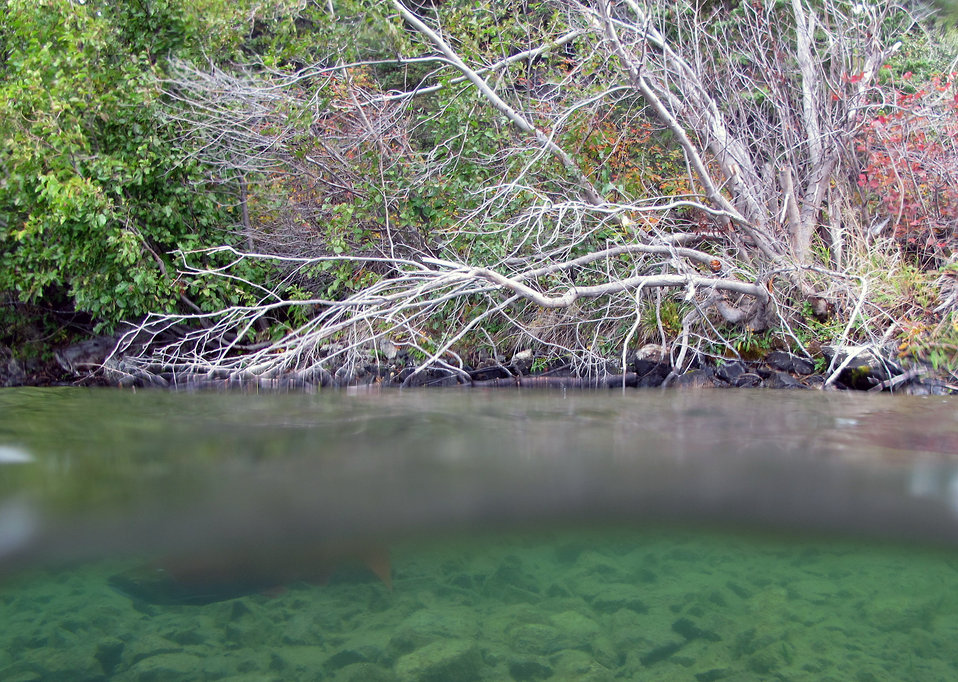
Just below the surface

Sockeye salmon in Hidden Lake (Kenai Peninsula).